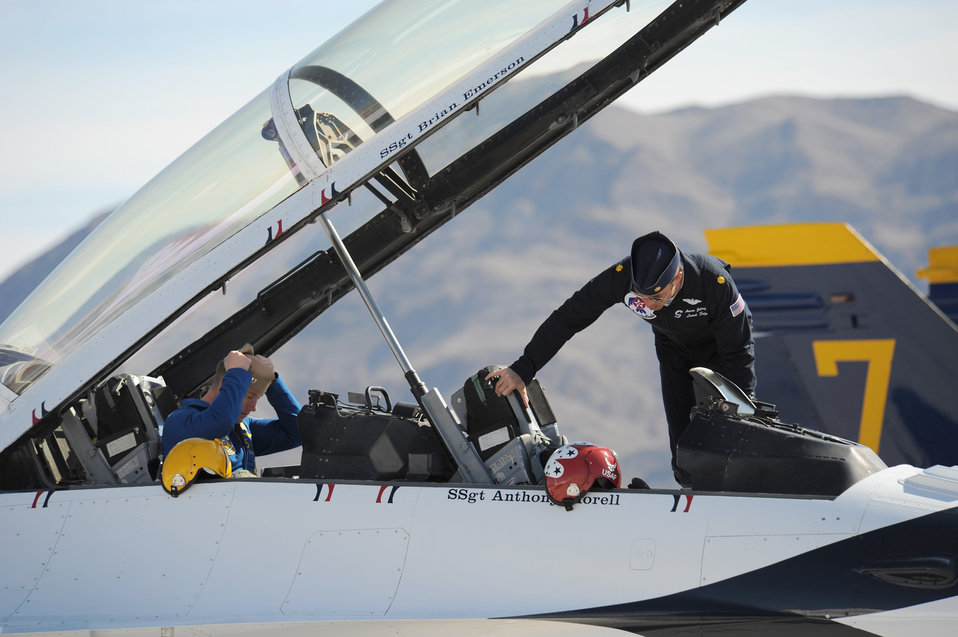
Thunderbirds fly the Blue Angels

Maj. Aaron Jelinek (right) and Lt. Ben Walborn return from a training mission Feb. 23, 2011, at Nellis Air Force Base, Nev. Major Jelinek is the Thunderbirds lead solo. Lieutenant Walborn is the Navy Blue Angels lead solo.